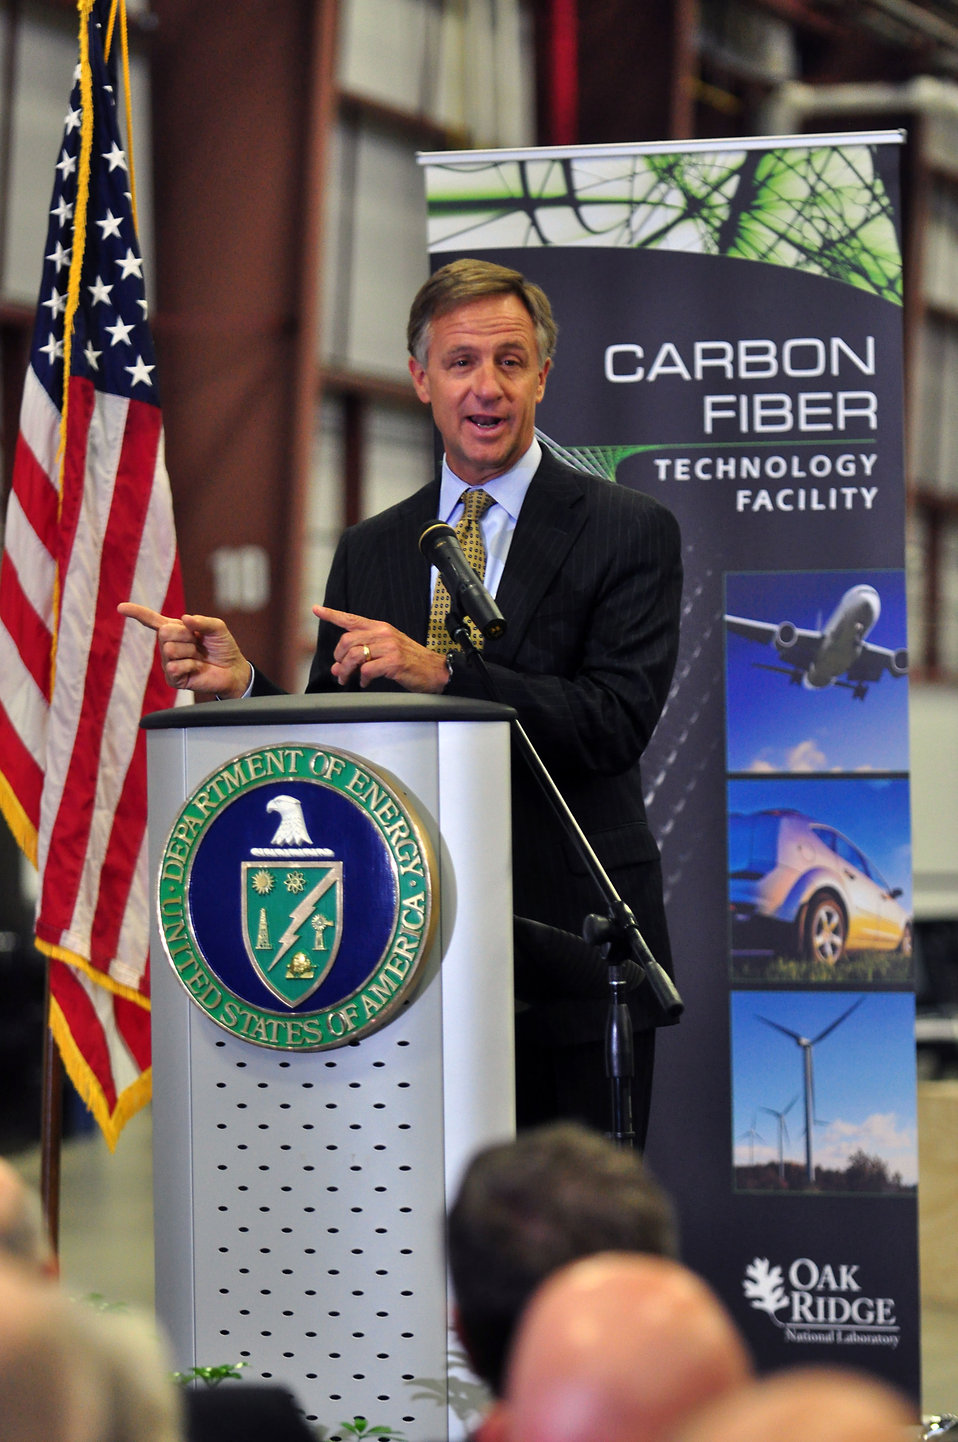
Carbon Fiber Technology Facilty Open House Oak Ridge Tennessee

13-025 DOE photo Lynn Freeny
Governor State of Tennessee Bill Haslam